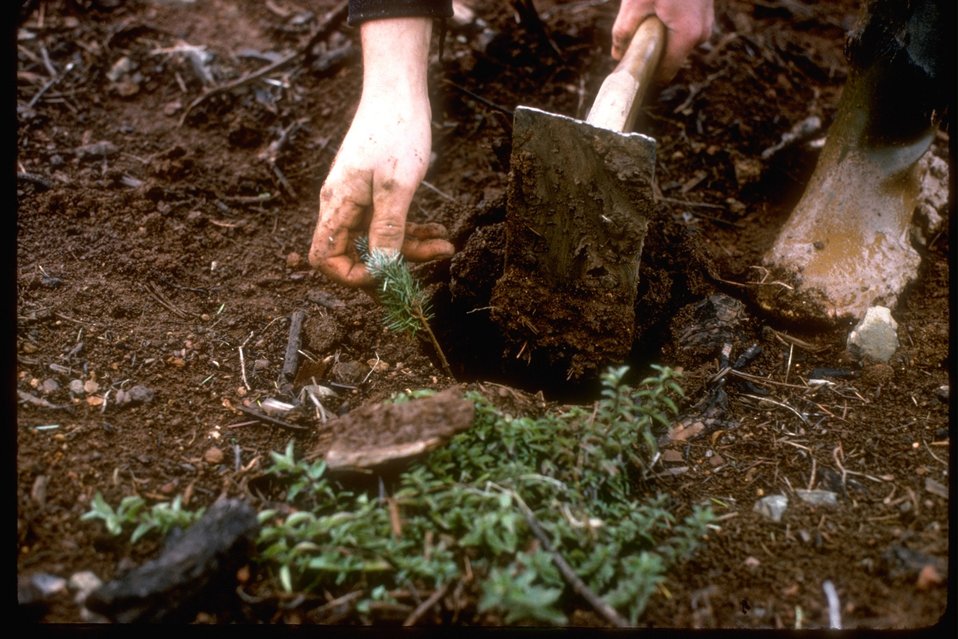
Field workers replanting trees after timber cut.